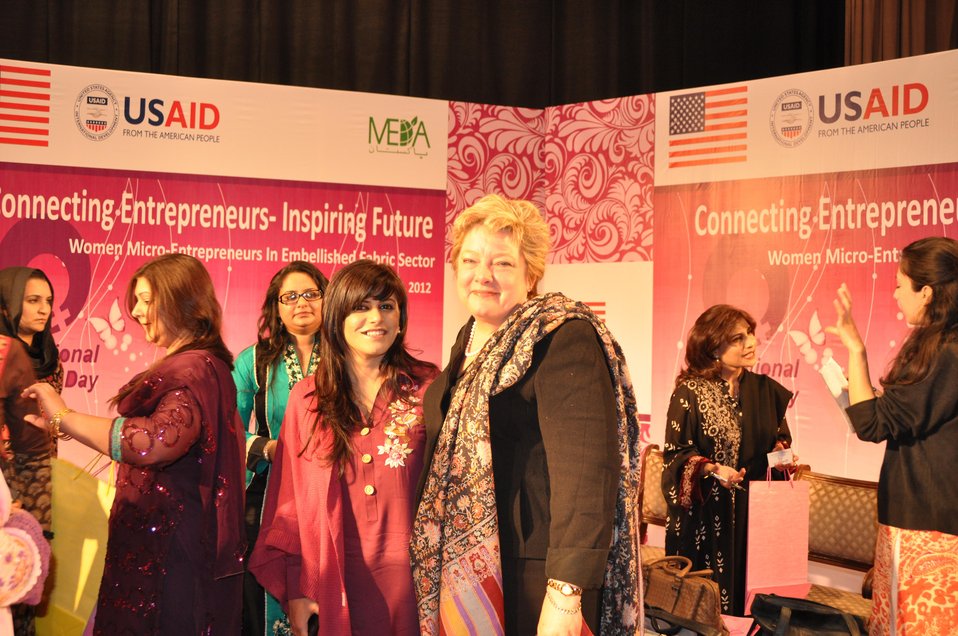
International Women’s Day

Islamabad, March 08, 2012 - The United States Agency for International Development (USAID) celebrated International Women’s Day, hosting a panel discussion with women entrepreneurs.
Panel members in addition to USAID’s
- Karen Freeman
- Wajeeha Nasreen, Sr. Product Development Manager, Gul Ahmed (famous Pakistani fabric brand)
- Dr. Nosheen, CEO, Generations (famous clothing brand)
- Razia Zubairi, Director General, Technical Education and Vocational Training Authority, Punjab
- Shaheen Khan, Sales Agent, ECDI, USAID sub-grantee